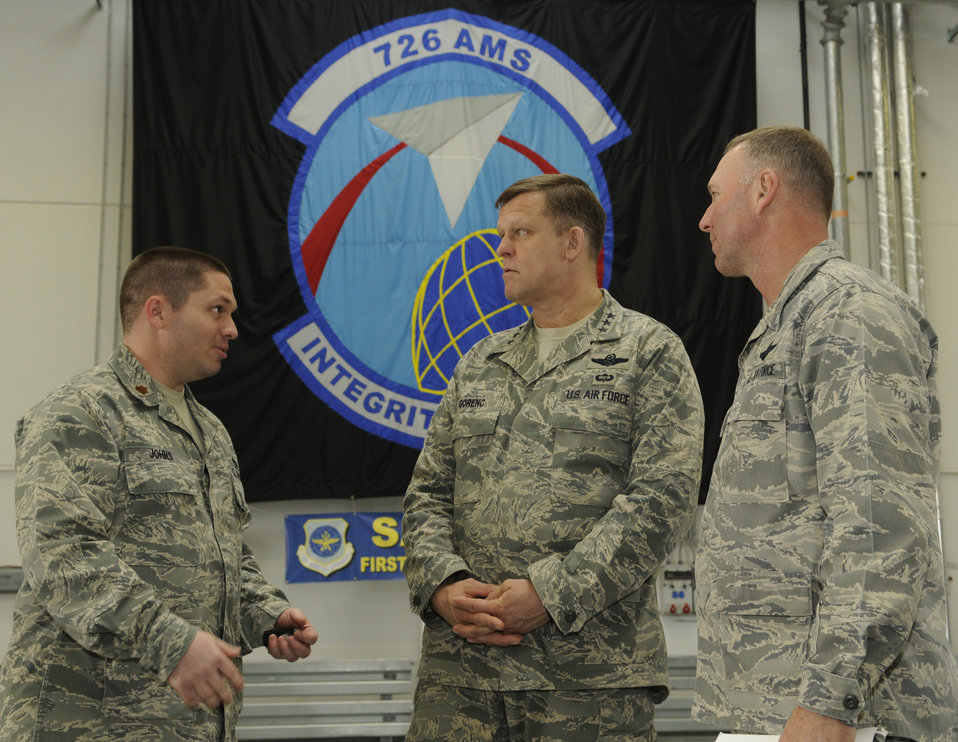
Changes at Spangdahlem

Maj. Jeffery John (left), 726th Air Mobility Squadron deputy commander at Spangdahlem Air Base, Germany, briefs Lt. Gen. Frank Gorenc (center), 3rd Air Force commander, about the mission capabilities and facilities of the 726th AMS Feb. 18, 2010, as Col. Tip Wight, 52nd Fighter Wing commander, observes. General Gorenc was visiting Spangdahlem for a tour and to speak to Airmen there about possible operational changes coming to the base.